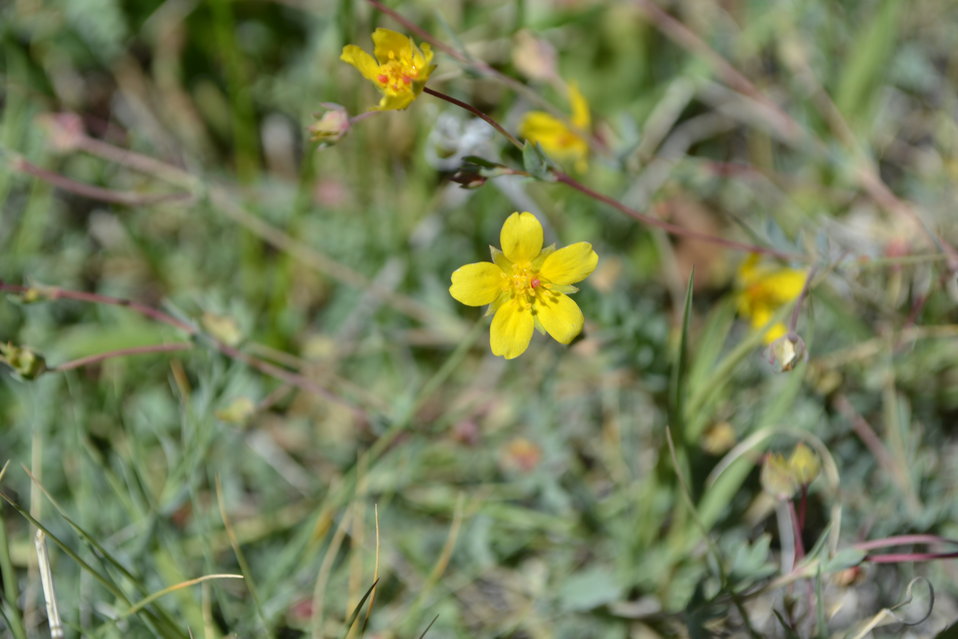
Soldier Meadow cinquefoil

The Soldier Meadow cinquefoil occurs on approximately 23 acres in Lassen County, California and Humboldt County, Nevada.